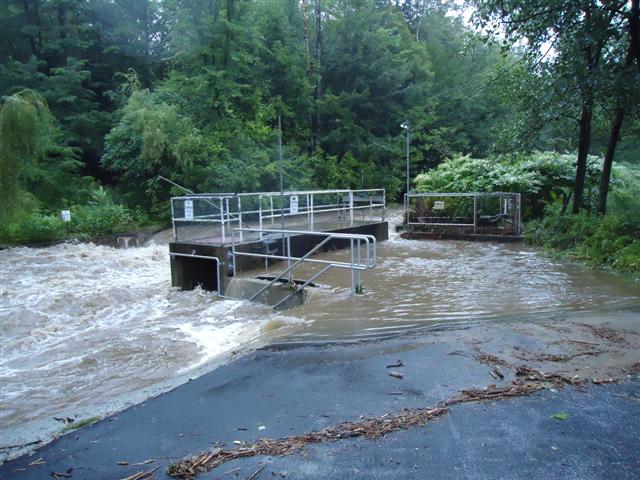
Storm damage at Eisenhower National Fish Hatchery in Vermont

Main water intake flooded.